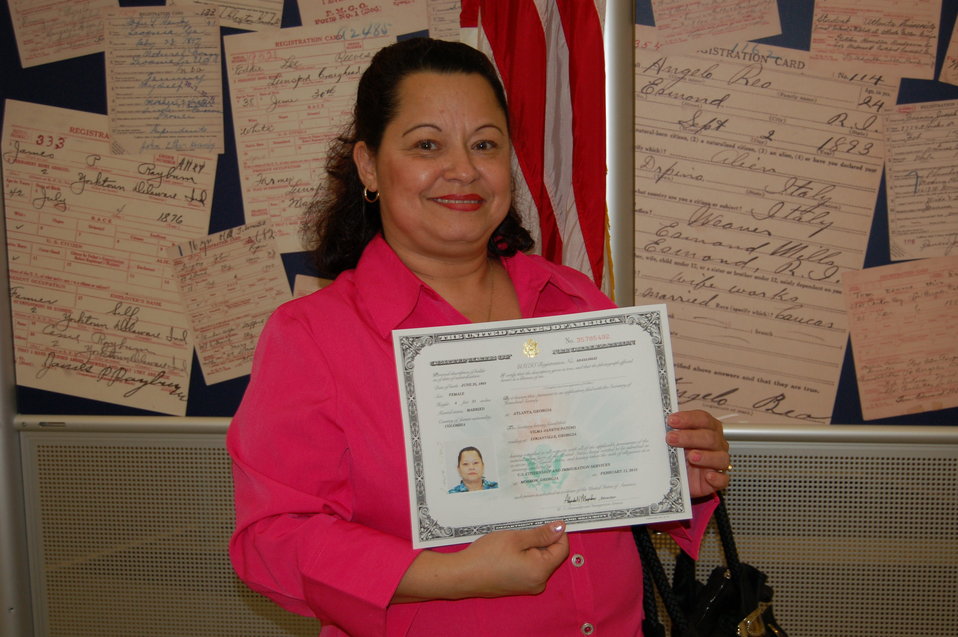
New Citizens